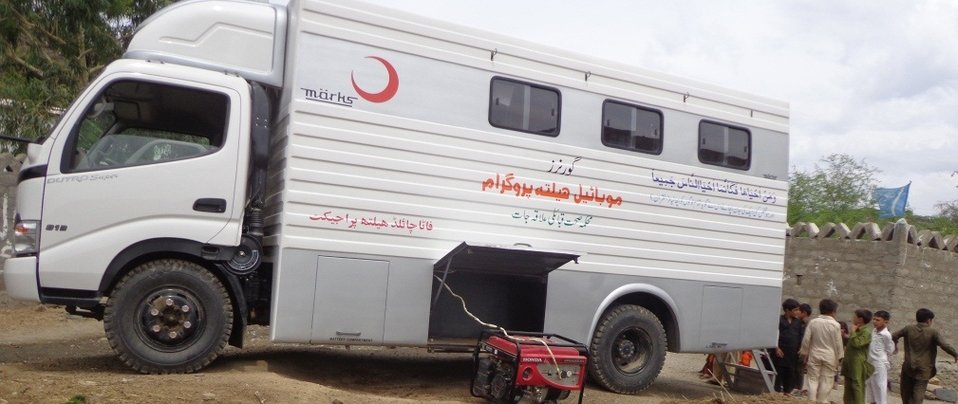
MHU Truck at Mohmand Agency, providing health services